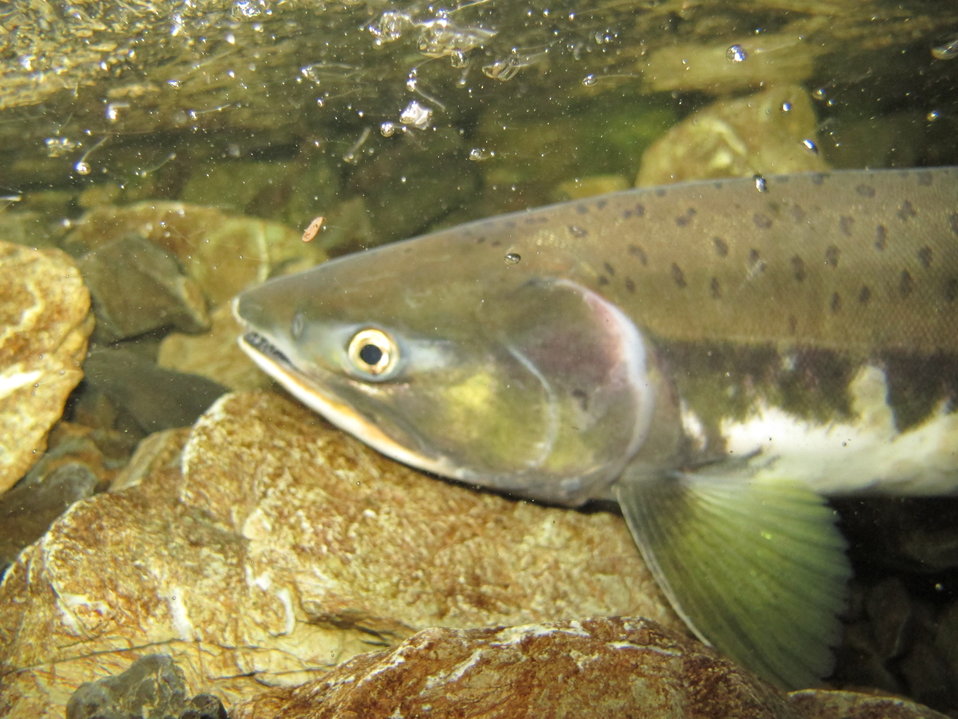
Pink salmon

female pink (humpy) salmon moving through a new, larger culvert with a natural streambed in Cordova, Alaska.